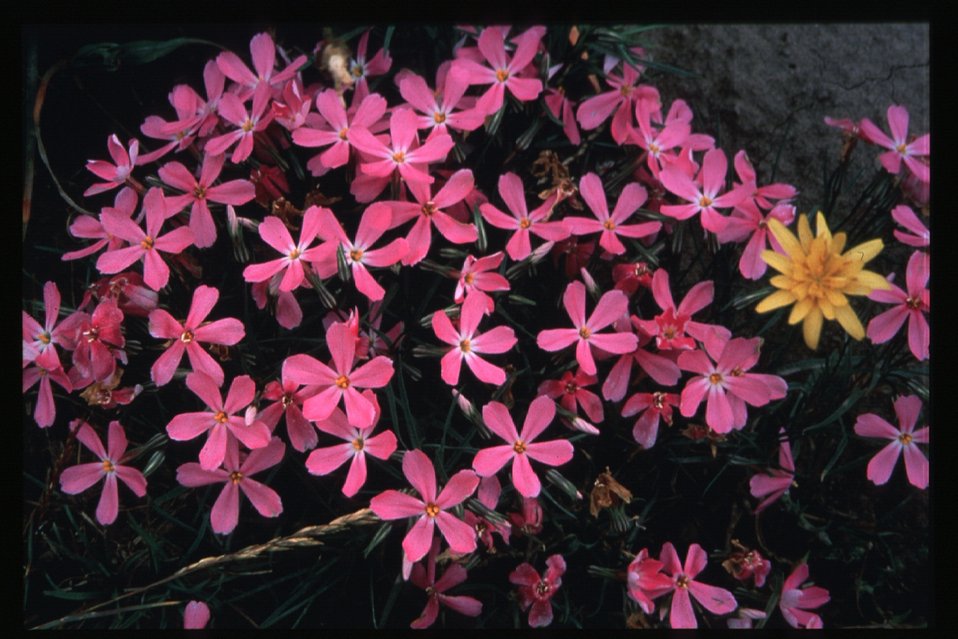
Wildflowers Scenic LSRD Lower Snake River District